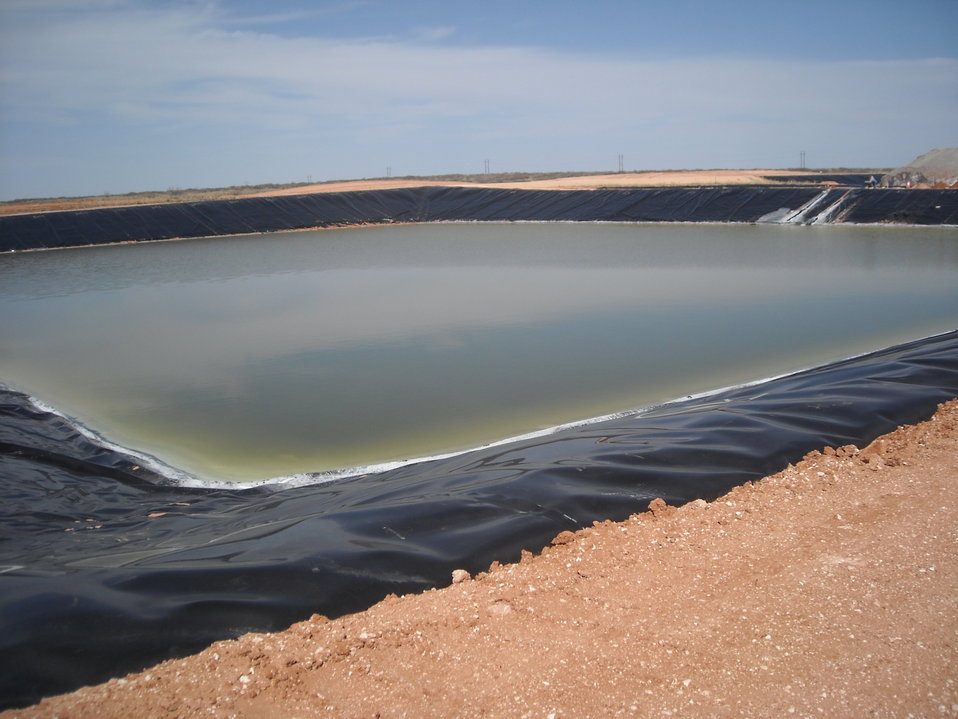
Recovery Act Accelerates Transuranic Waste Disposal Across DOE Complex

These photos show a Recovery Act-funded storm water runoff pond at WIPP during construction and after construction.